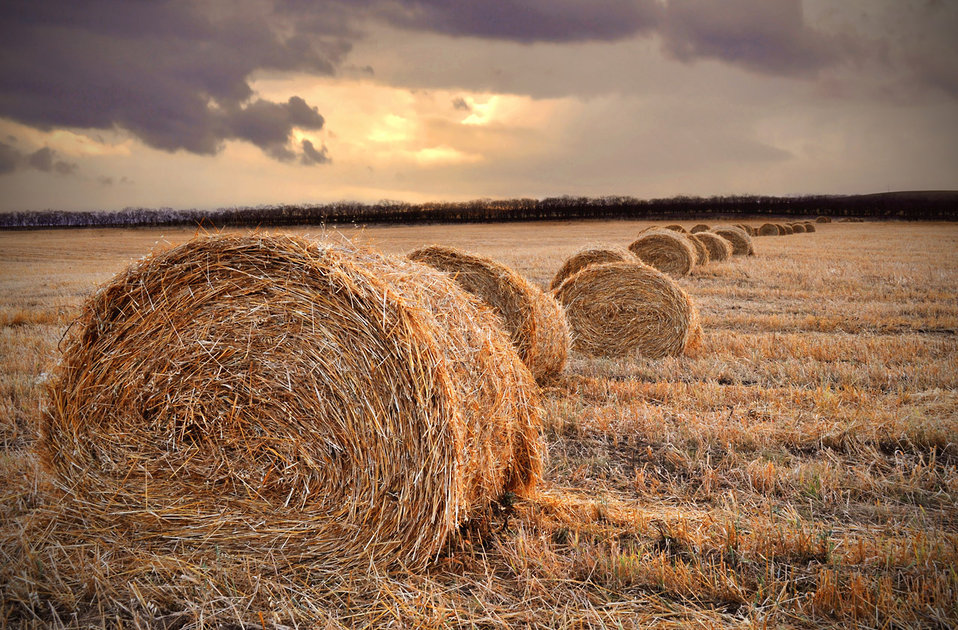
Straw in the field

In the harvested straw and procured.